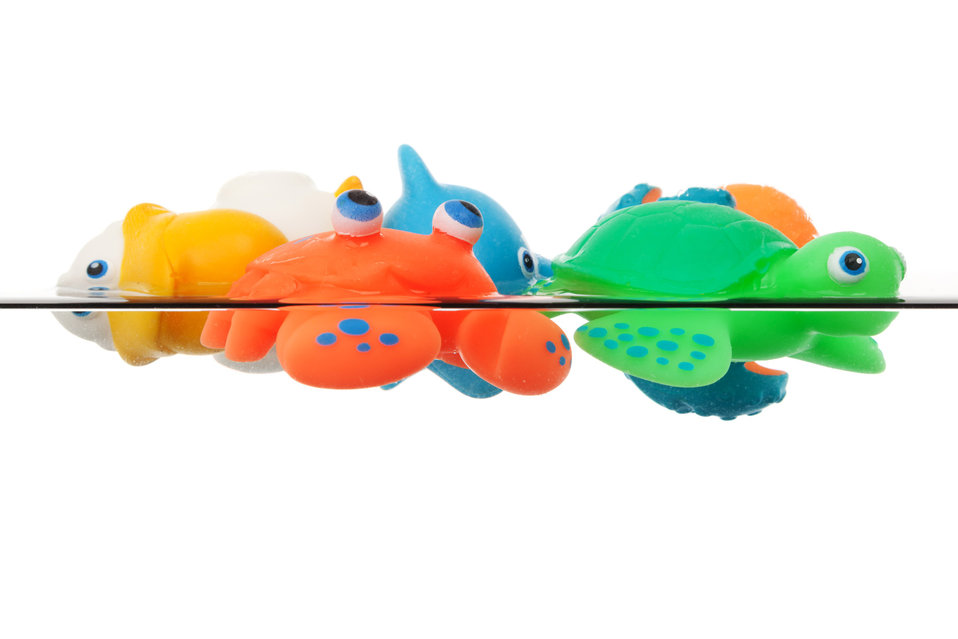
Bath toys in water isolated on white background.